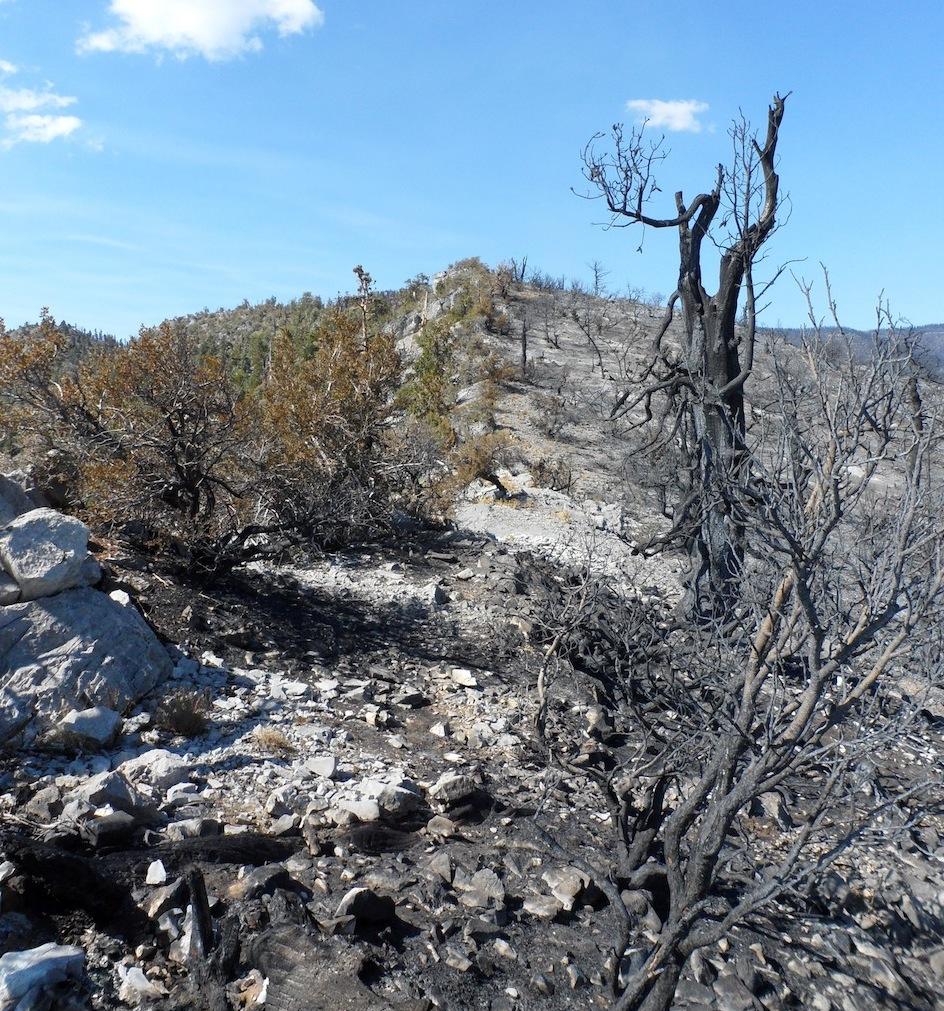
The ridgeline above Lee Spring burned from the Carpenter Fire. The Carpenter Fire in the Toiyabe National Forest near Humboldt, NV was caused by a lightning strike on Jul. 1, 2013. The fire has consumed nearly 27,881acres and is presently 95% contained.